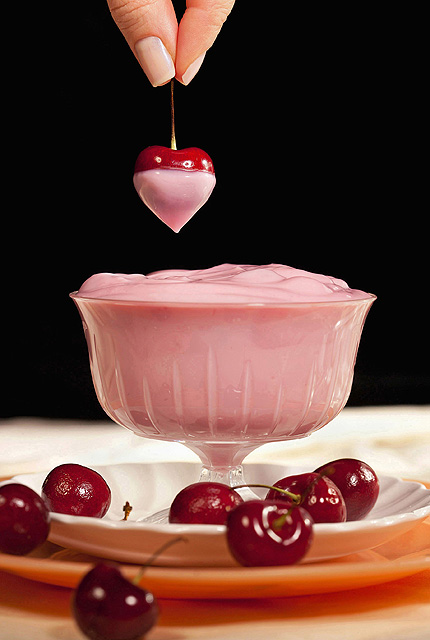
Agriculture Research Service (ARS) scientists performed tests on low-fat yogurt to see how much oat fiber can be added without affecting key qualities of this popular dairy food.